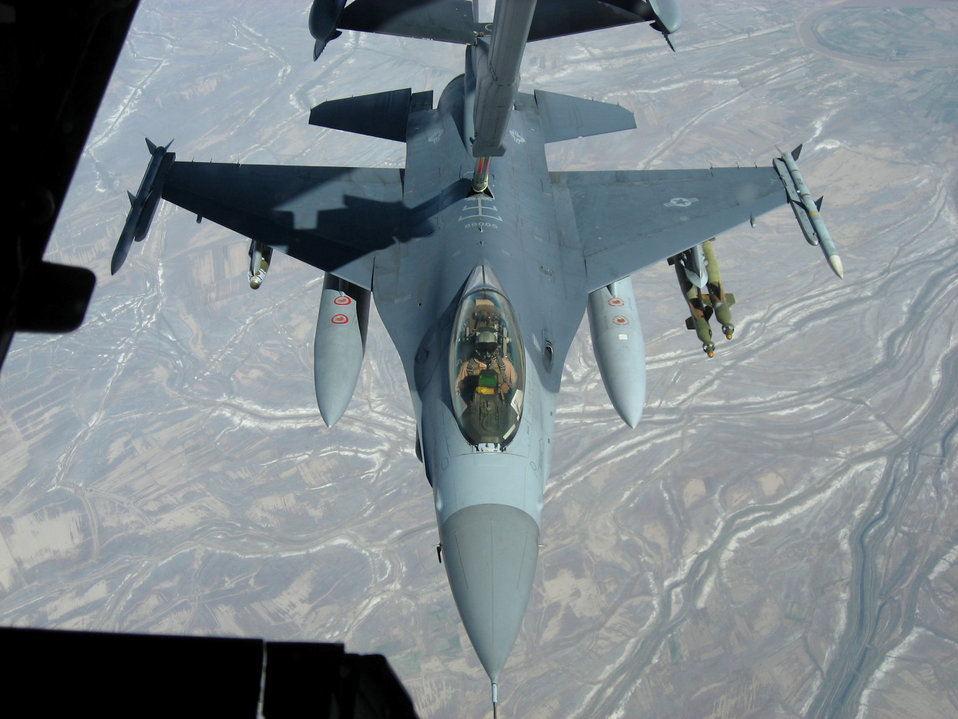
Refueling the fight

An F-16 Fighting Falcon from Balad Air Base, Iraq, takes fuel from a KC-10 Extender over Iraq Nov. 20. The KC-10 refueled two jets that afternoon in support of Operation Iraqi Freedom. The KC-10 aircrew is deployed in support of the 380th Air Expeditionary Wing.